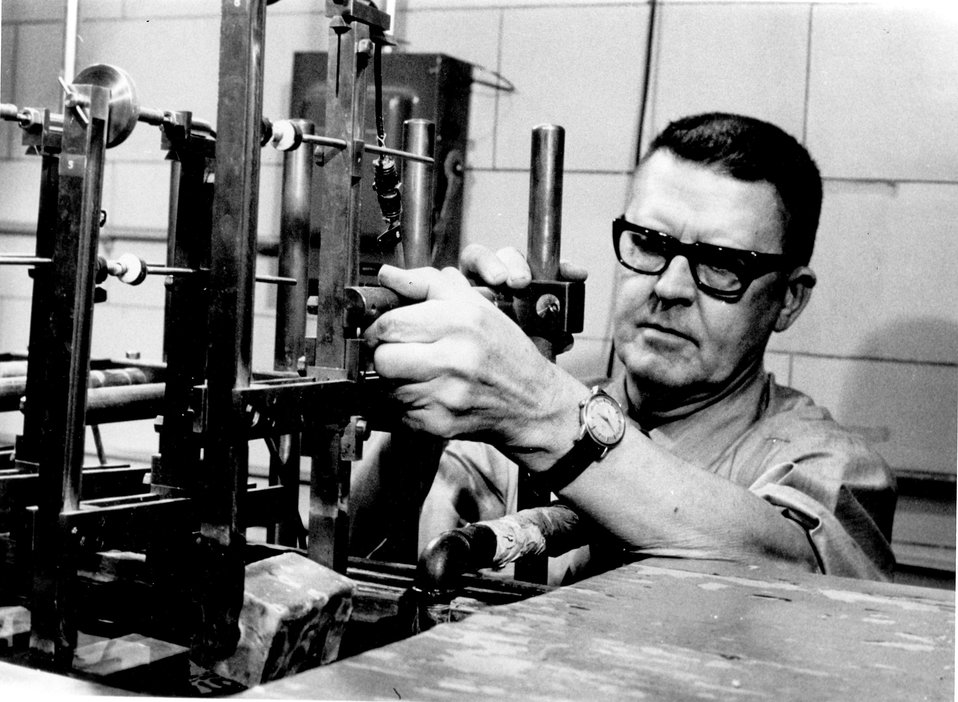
Normal concrete is soaked in a monomer plastic and irradiated with gamma rays to polymerize the plastic within voids in the concrete. c. 1971